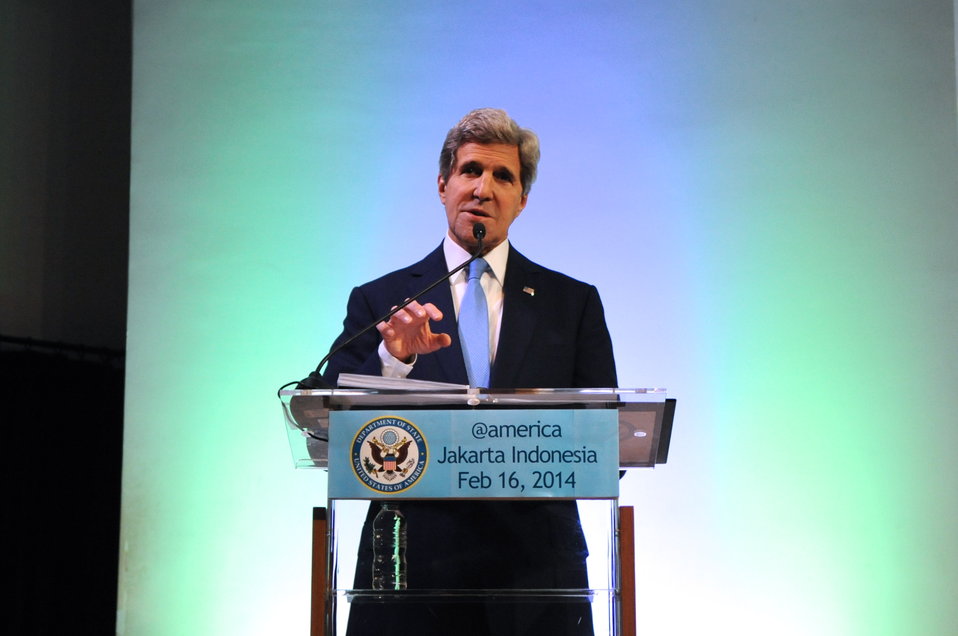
Secretary Kerry Delivers Climate Change Speech in Indonesia

U.S. Secretary of State John Kerry delivers the first of three major climate change speeches while visiting Jakarta, Indonesia, on February 16, 2014.